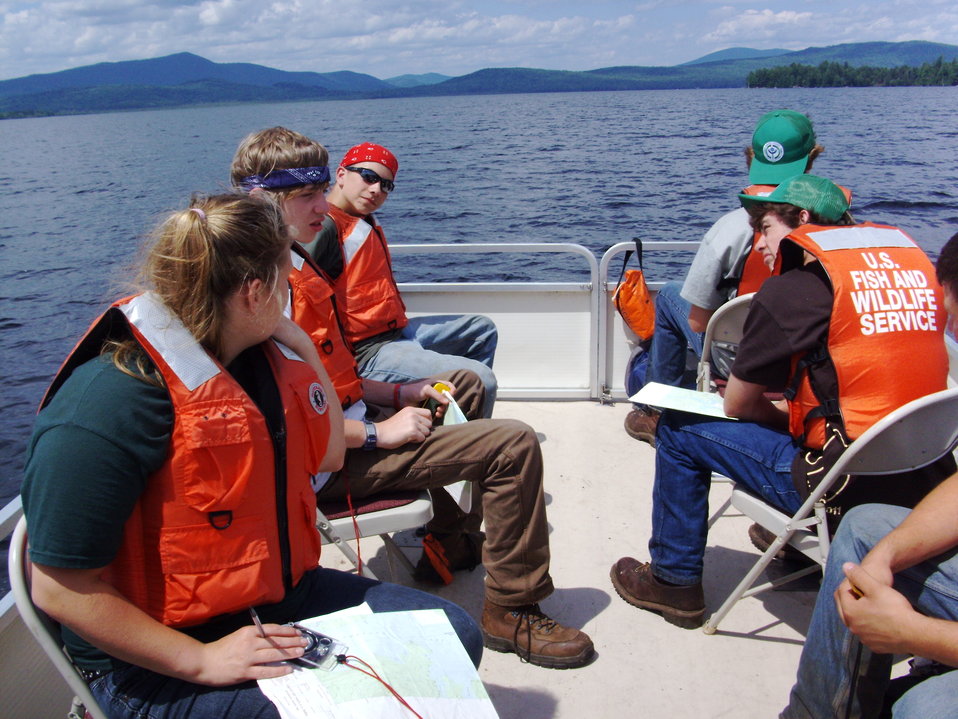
Environmental Education on Umbagog Lake

The YCC crew at Umbagog National Wildlife Refuge spends a day out on Umbagog Lake.